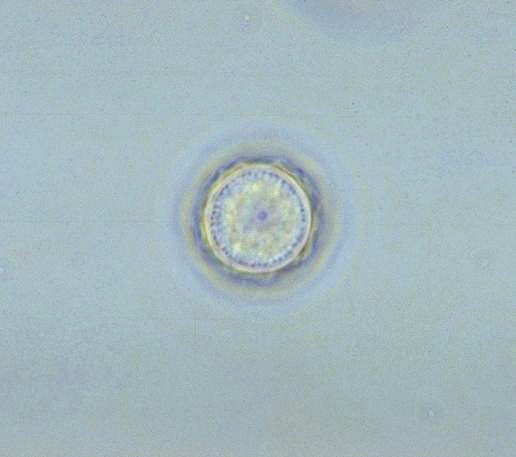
Acanthamoeba polyphaga cyst.